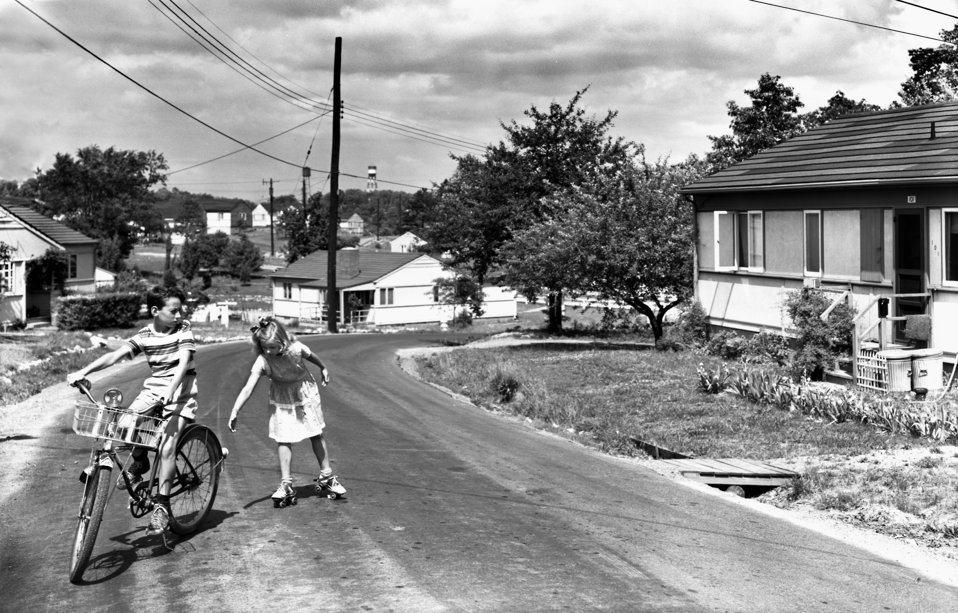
Children Playing on Street Oak Ridge 1948

5105c DOE photo Ed Westcott May 1948 Oak Ridge Tennessee